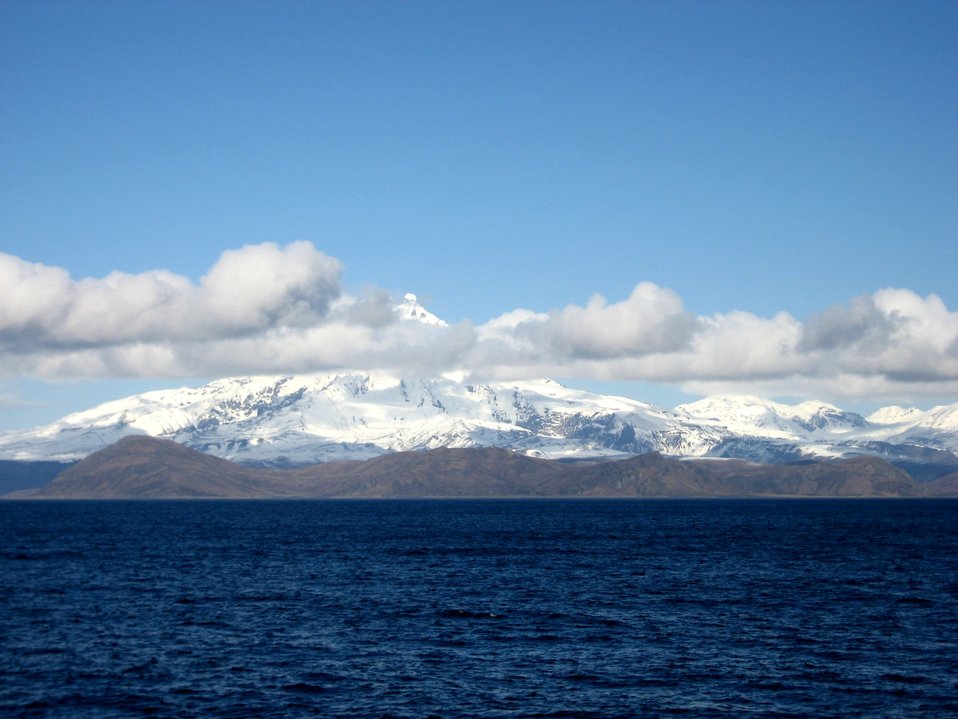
Shishaldin Volcano, one of the great navigational landmarks of Alaska.